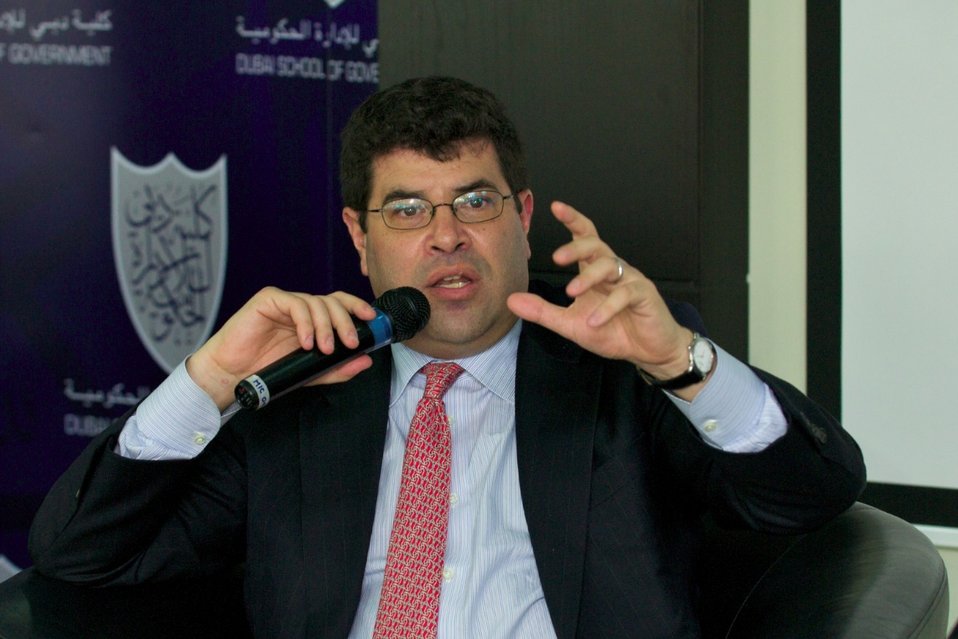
Dubai School of Government Discussion

On February 16, 2010 Deputy Secretary Wolin at Dubai School of Government discusses the global economy in the wake of the financial crisis and the importance of cooperation between the U.S. and the Arab world.